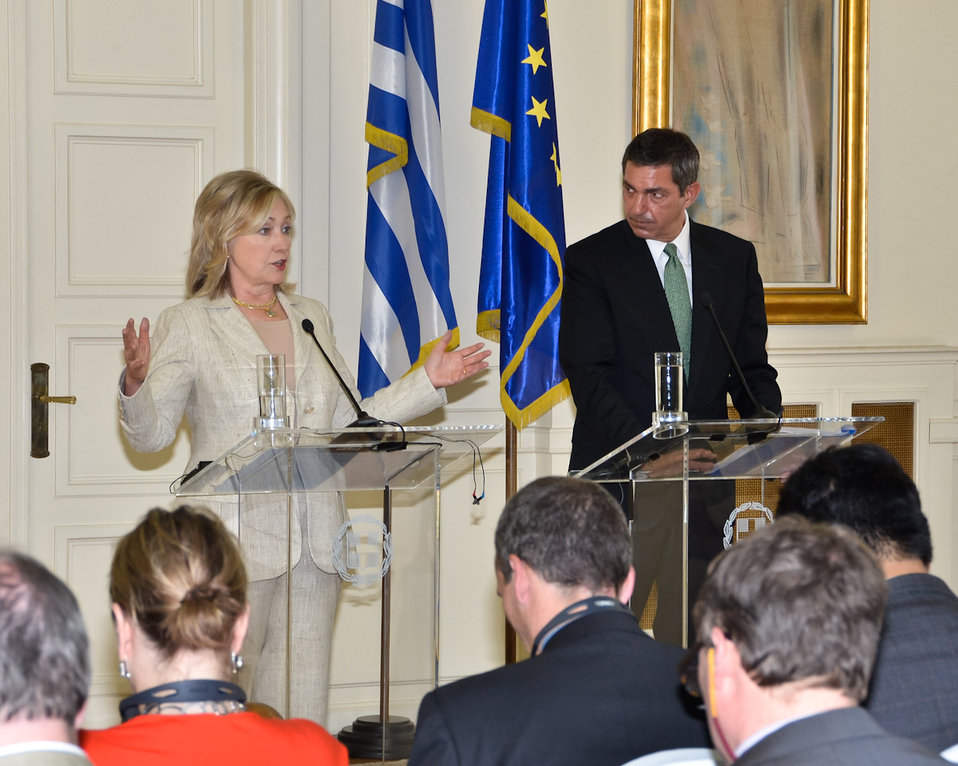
Secretary Clinton and Greek Foreign Minister Lambrinidis Host a Joint Press Conference

U.S. Secretary of State Hillary Rodham Clinton and Greek Foreign Minister Stavros Lambrinidis host a joint press conference after their bilateral meeting in Athens, Greece, on July 17, 2011.